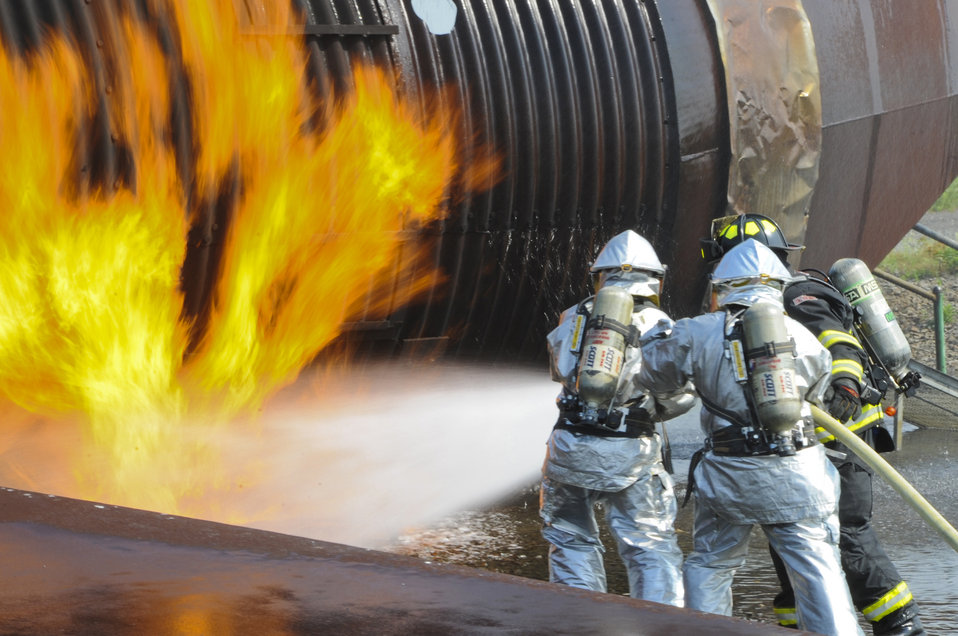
Firefighter training

Airmen and Marines fight a fire near the rear of a training aircraft June 10, 2011, during a joint firefighting course at Joint Base McGuire-Dix-Lakehurst, N.J.